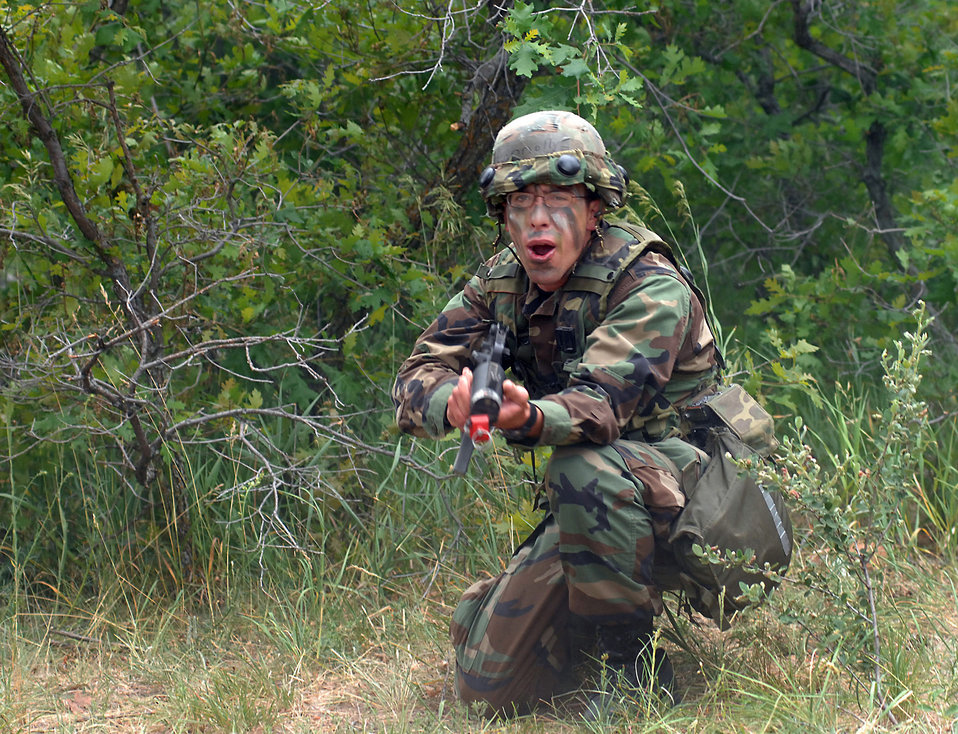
Global Engagement teaches leadership, base deployment

Cadet 3rd Class Luke Connolly yells instructions to his squadron while taking fire from opposition forces during the Global Engagement course July 10 at the Air Force Academy in Colorado. The purpose of Global Engagement is to lay the foundation of attitudes, knowledge and skills necessary to lead, fight, and win in a dynamic and diverse global environment. Sergeant Akers is a security forces instructor from Moody Air Force Base, Ga.